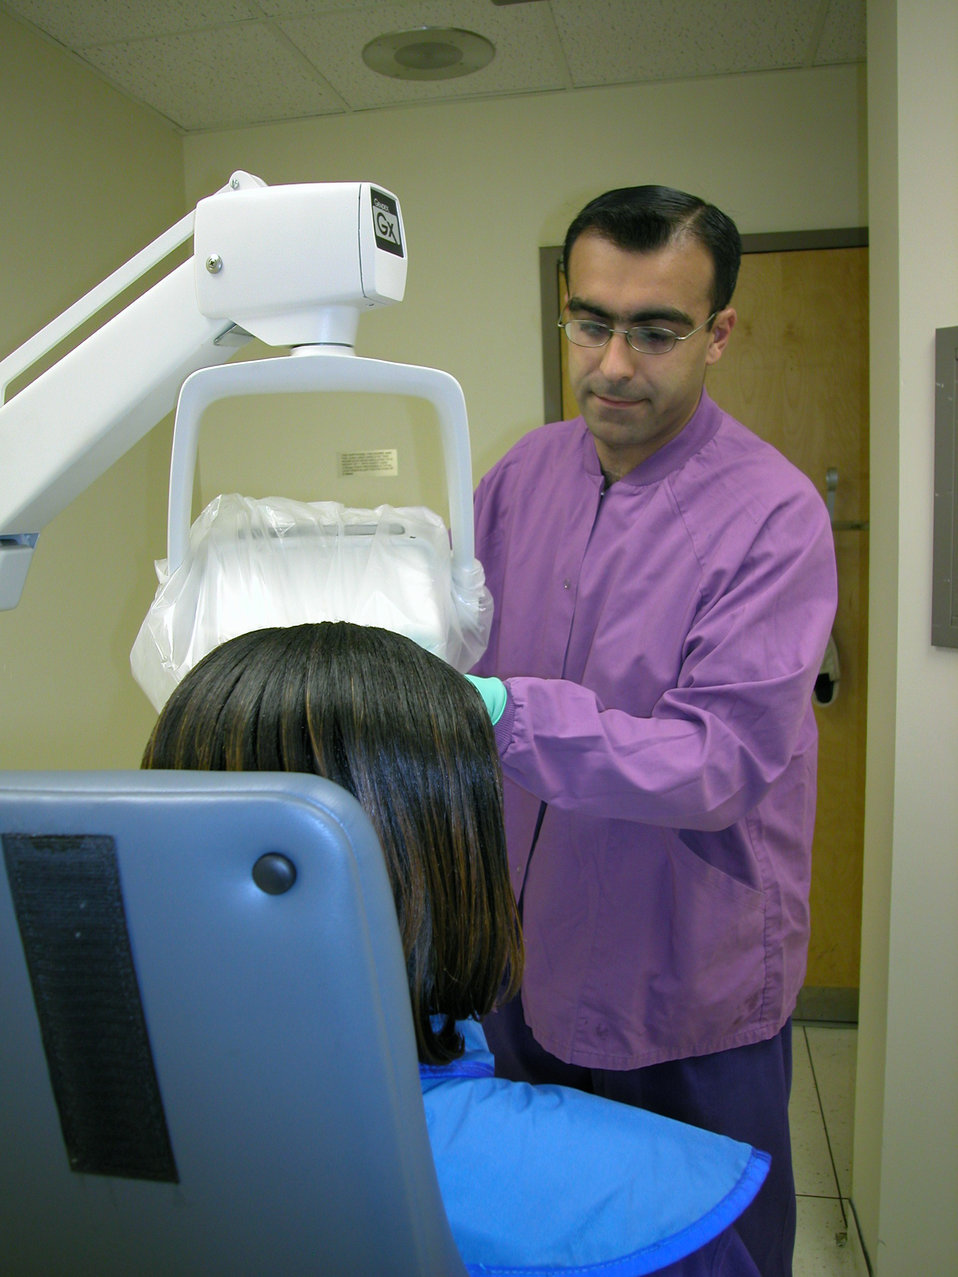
Dental technician becomes U.S. citizen

WRIGHT-PATTERSON AIR FORCE BASE, Ohio -- Airman 1st Class Mohammed Al Janabi prepares to take a dental X-ray. Born in Iraq, he became a U.S. citizen during ceremonies held in the federal courthouse in nearby Dayton on Sept. 16. He is a dental technician with the 74th Dental Squadron here.